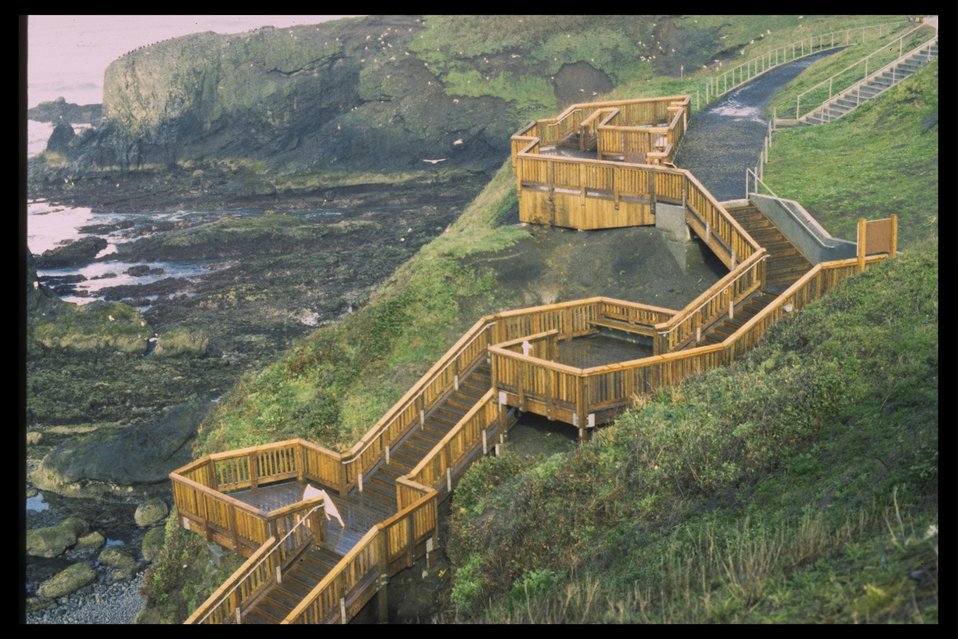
Cobble Beach Staircase near Yaquina Head Lighthouse.